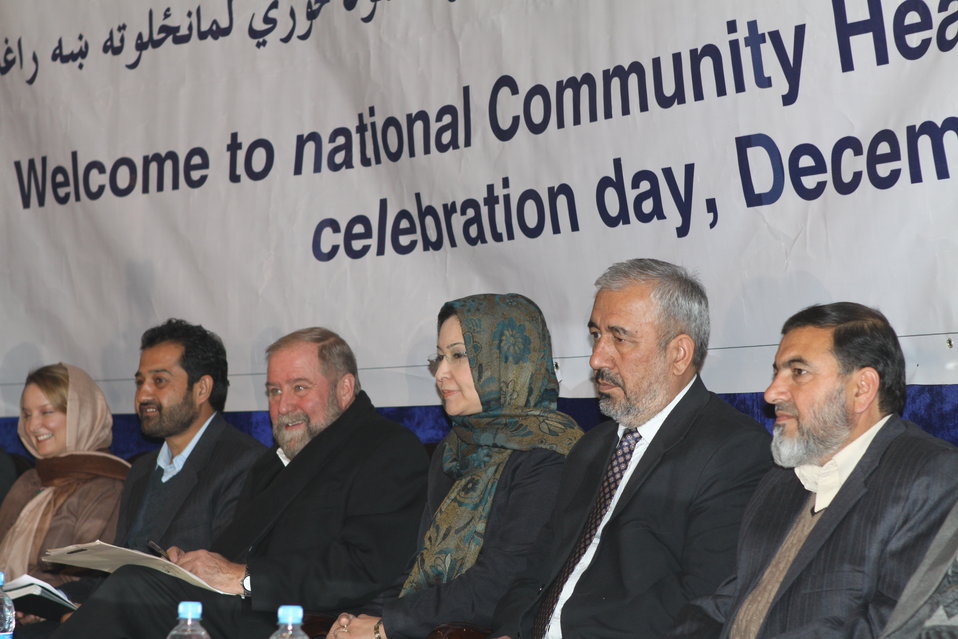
Community Health Workers Celebrated

Kabul, Afghanistan | December 5, 2010 — In support of the United Nations designated International Volunteer Day for Economic and Social Development, Afghanistan’s Ministry of Public Health celebrated its annual Community Health Worker Day today. Acting Minister of Public Health Dr. Suraya Dalil, USAID Senior Deputy Mission Director Robert Hellyer, other government officials, and international donors joined in recognizing the critical contribution of community health workers in Afghanistan and encouraging them to continue their voluntary support to their communities.
The event praised the contributions of the more than 22,000 volunteers throughout the country who deliver community level health-education, counseling, and services out of village health posts located in private homes. The Ministry of Public Health envisioned that community-based healthcare programs will actively encourage communities and families to adopt healthy lifestyles and behaviors, and provide families access to high quality and socially acceptable preventative medicine and life-saving services.
“We have 22,000 community health workers in Afghanistan that are able to implement the basic and standard medicines. They all have been trained through a job description,” said Minister Dalil. Addressing the health workers, she added, “I am proud and feel powerful that I have people like you.”
USAID-funded health projects collaborate closely with the Ministry of Public Health to improve the health and nutritional status of Afghans, provide quality primary healthcare, and promote healthy behaviors at the community and household-levels. USAID supported the training of more than 9,000 of the volunteer community health workers currently working in Afghanistan.
“On behalf of the American people, I congratulate the Community Health Workers for their diligence to gain the skills and knowledge necessary to serve their communities in this important role,” said USAID Senior Deputy Mission Director Hellyer. “USAID strongly supports community based health care and believes that quality community-based health services are essential to reaching Afghanistan’s Millennium Development Goals.”
To support the Basic Package of Health Services, USAID assisted in developing the community health worker training manual, helped train community health worker supervisors and master-trainers, facilitated in-service training, and produced and developed reporting tools, job aids, and education materials.